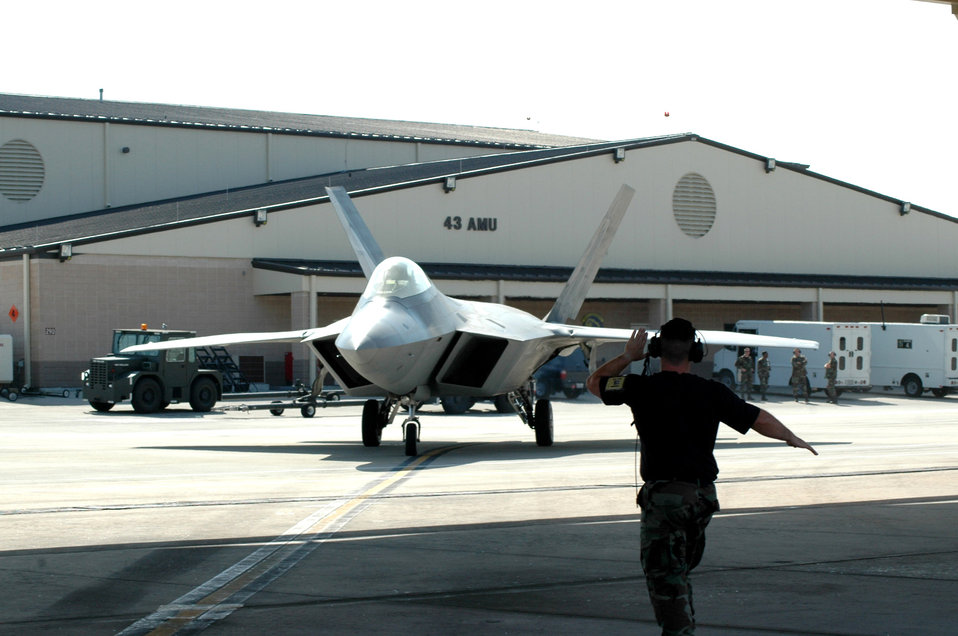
Tyndall receives F-22A maintenance trainer

Tech. Sgt. Lewis Hale, marshals an F-22A Raptor, the new ground instructional trainer aircraft at the 43rd Fighter Squadron, at Tyndall Air Force Base, Fla., on Wednesday, April 19, 2006. Sergeant Hale is with the 325th Maintenance Operations Squadron.